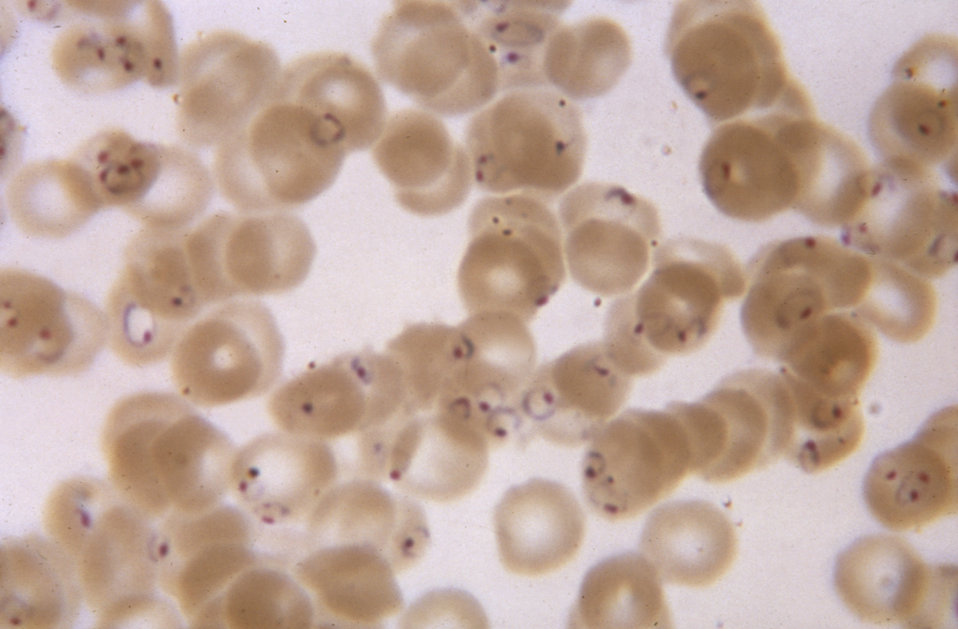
This photomicrograph shows numerous Plasmodium falciparum rings; Magnification 1150X.